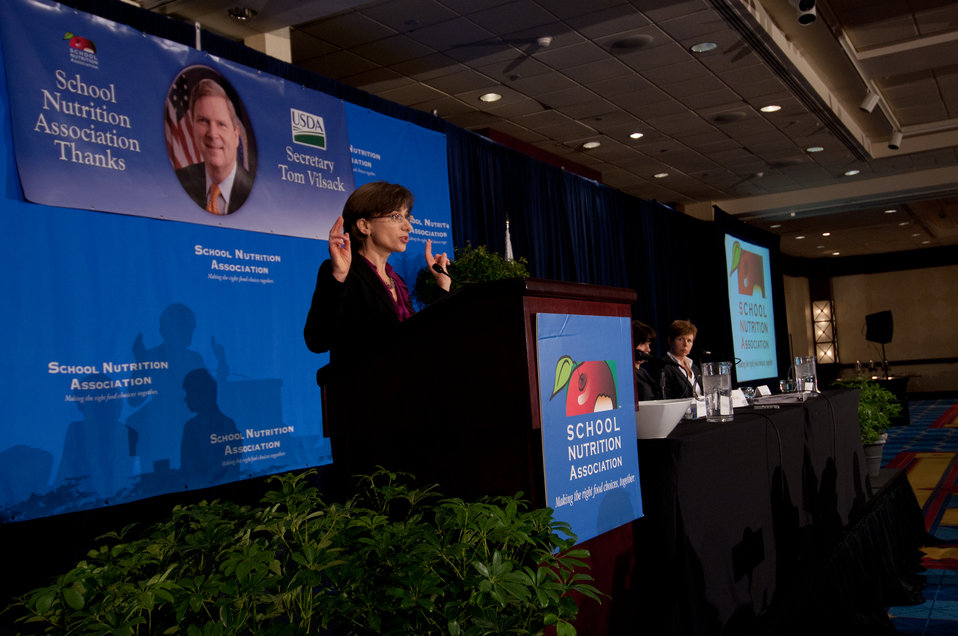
U.S. Department of Agriculture Food and Nutrition Service Child Nutrition Director Cindy Long responded to questions during the School Nutrition Association’s closing general session of their 39th annual Legislative Action Conference at the J.W. Marriott Hotel in Washington, D.C., on Wednesday, March 9, 2011.